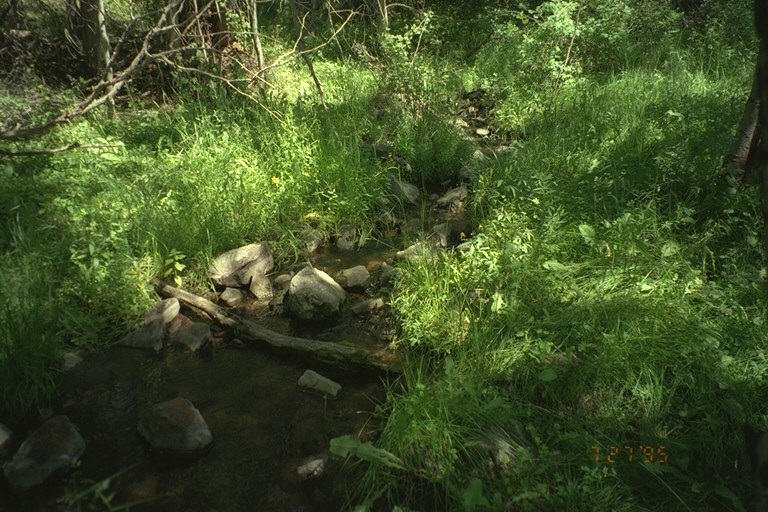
Riparian area Public Lands Salmon Field Office UCSC Upper Columbia Salmon Clearwater District